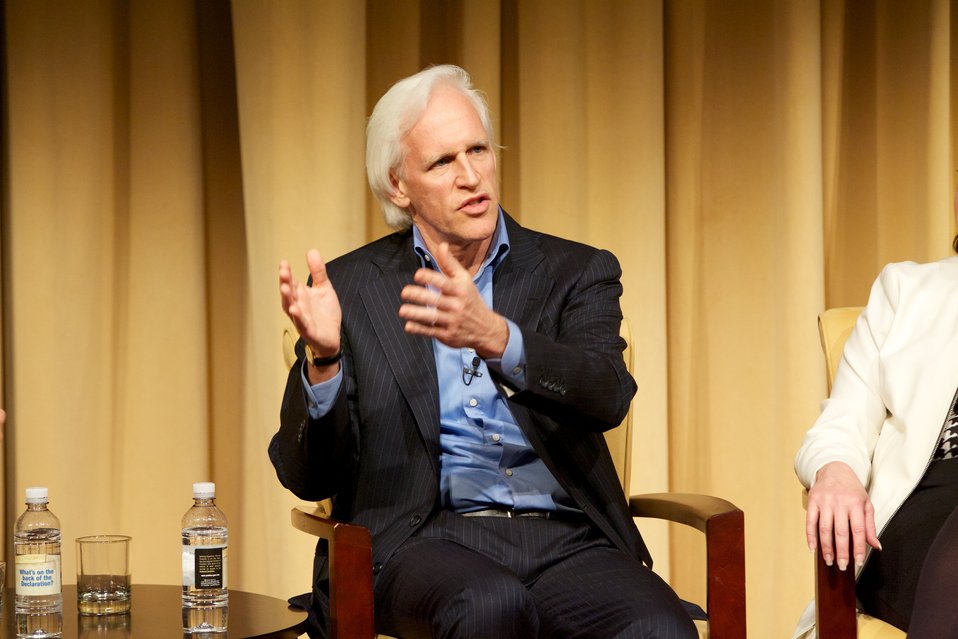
The Monuments Men; Robert M. Edsel, author